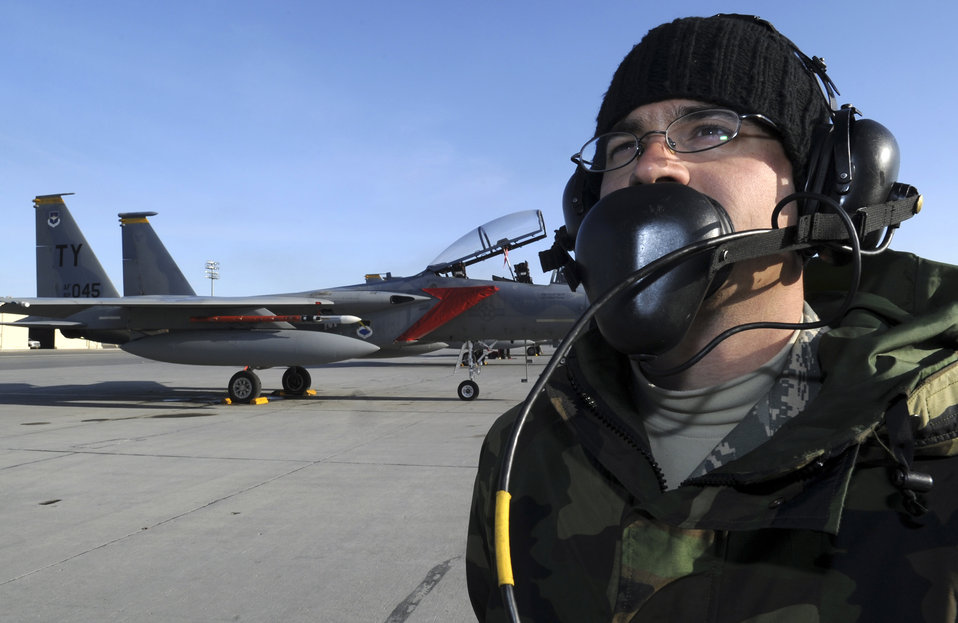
Maintainers keep Red Flag-Alaska jets flying

Airman 1st Class Gabriel Doering waits for his jet to taxi for takeoff at Elmendorf Air Force Base, Alaska, April 28 after preparing the F-15 Eagle for a training mission during Red Flag-Alaska 09-2. The exercise enables flying squadrons to enhance their warfighting capabilities by flying simulated combat sorties in a realistic threat environment. Airman Doering is with the 2nd Aircraft Maintenance Unit at Tyndall AFB, Fla.